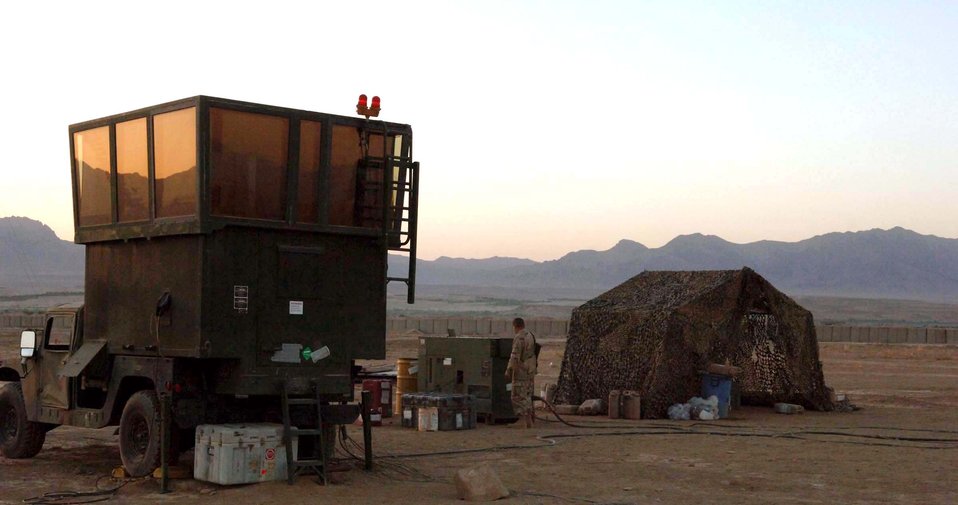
Controlling skies over dangerous territory

Airman 1st Class Juan Felanpena checks the mobile air traffic control center generator before the sun sets July 10 at Tarin Kowt, Afghanistan. Airman Felanpena, a power production specialist, is deployed to Forward Operating Base Martello with an 11-person air traffic control team at the request of the Army.